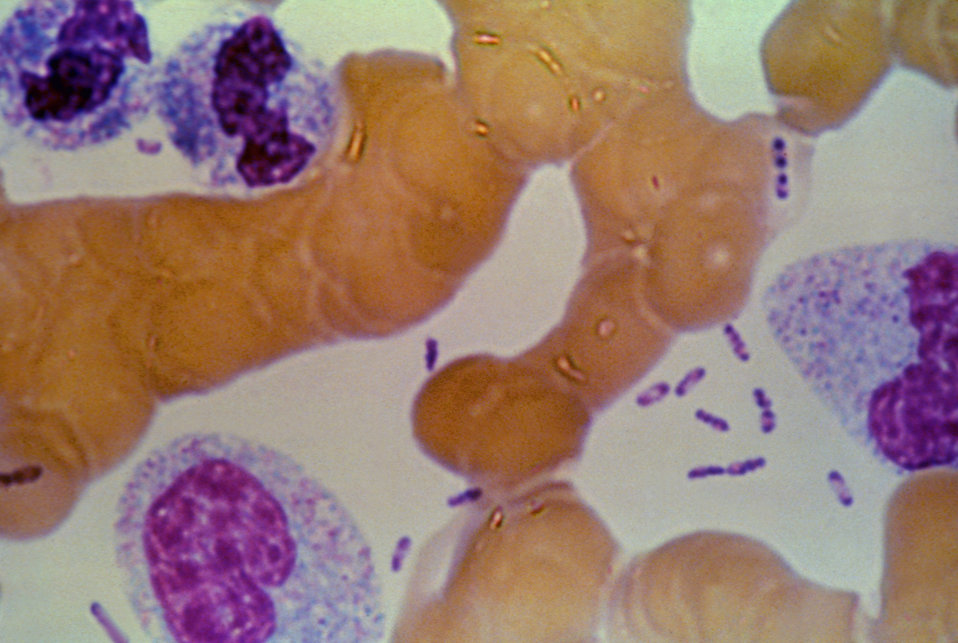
Dark stained bipolar ends of Yersinia pestis can clearly be seen in this Wright's stain of blood from a plague victim.